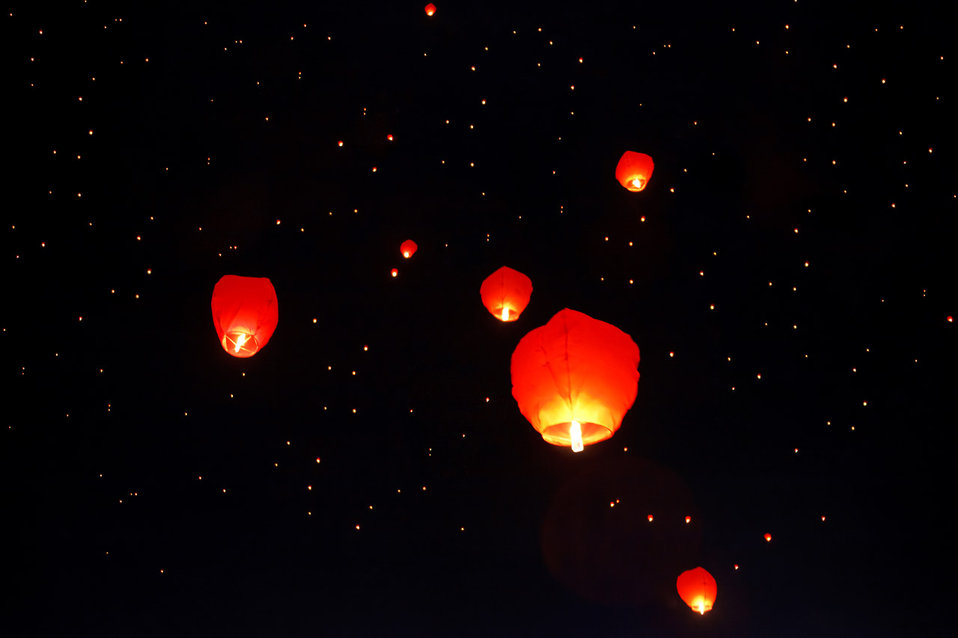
Sky lanterns

Many sky lanterns floating on dark sky.